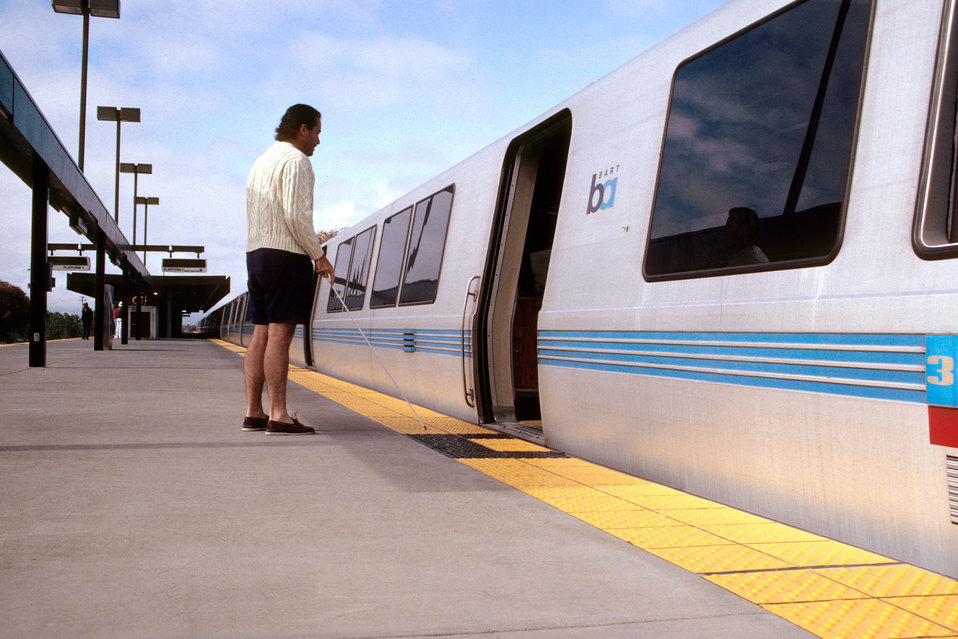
This 1995 image depicted a visually-impaired man with a walking stick who was approaching the opened electronic doorway of a high-speed train from a platform, the edge of which was surfaced with a high contrast, enhanced-tactile yellow covering. A transit/subway platform with a yellow detectable warning strip assists people with visual impairments from inadvertently walking into hazardous vehicular routes. The tactile difference between the warning strip and the adjacent surface is a good textural cue underfoot, while also producing an auditory distinction when a long cane user taps from one surface then the other. The contrast and tactile distinction are valuable for sighted users also.